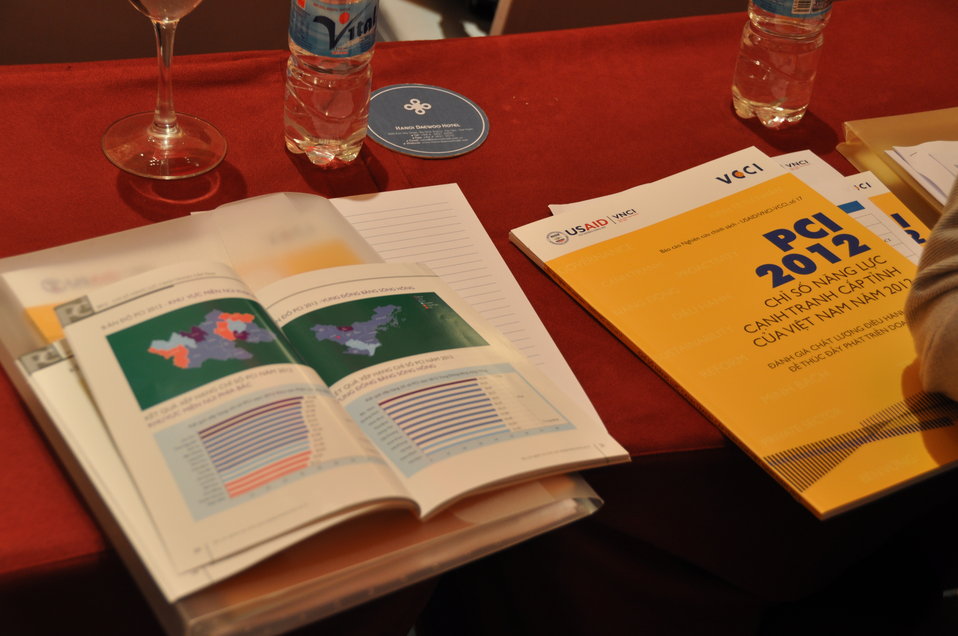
Provincial Competitiveness Index Launch, March 14, 2013

Hanoi, March 14, 2013